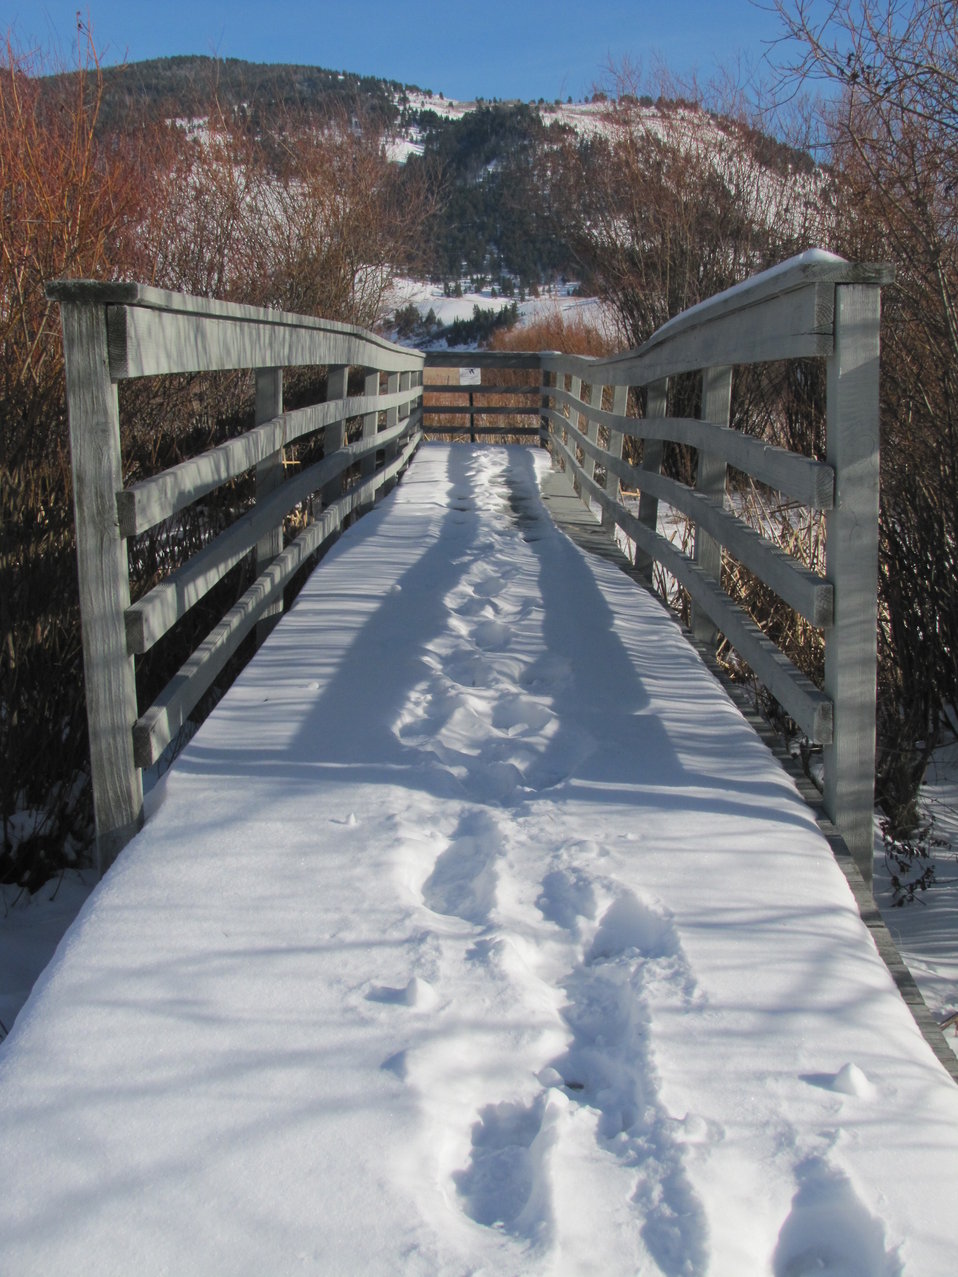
Freshly Fallen Snow

The ramp to a remote observation deck at the visitor center on the National Elk Refuge bears the evidence of a recent snowfall.